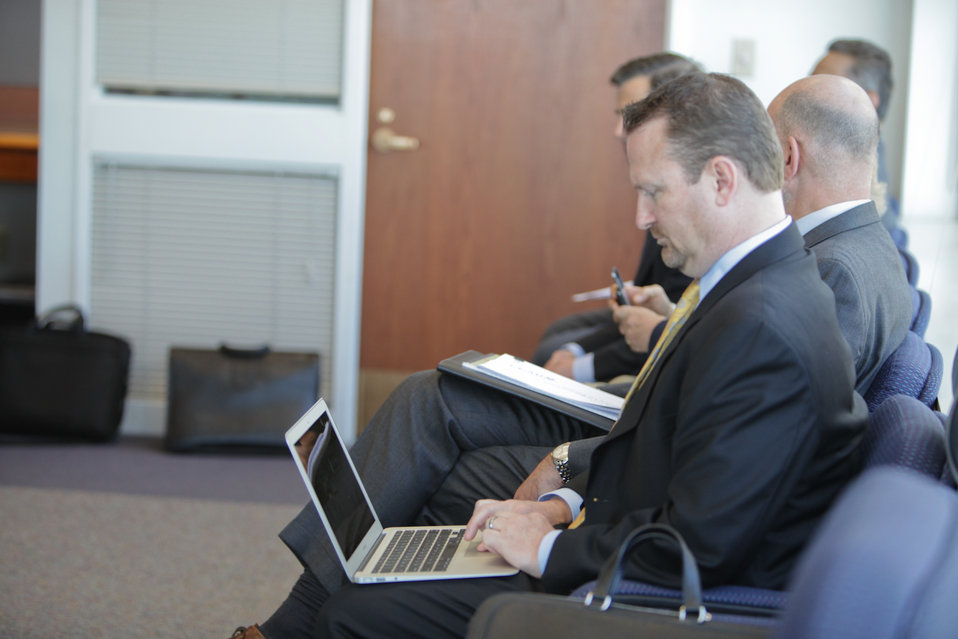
FCC Chairman Host Leaders From the Digital Education Ecosystem

Attendee taking notes at the FCC Chairman's event at FCC's HQ in Washington, DC on March 29, 2012.